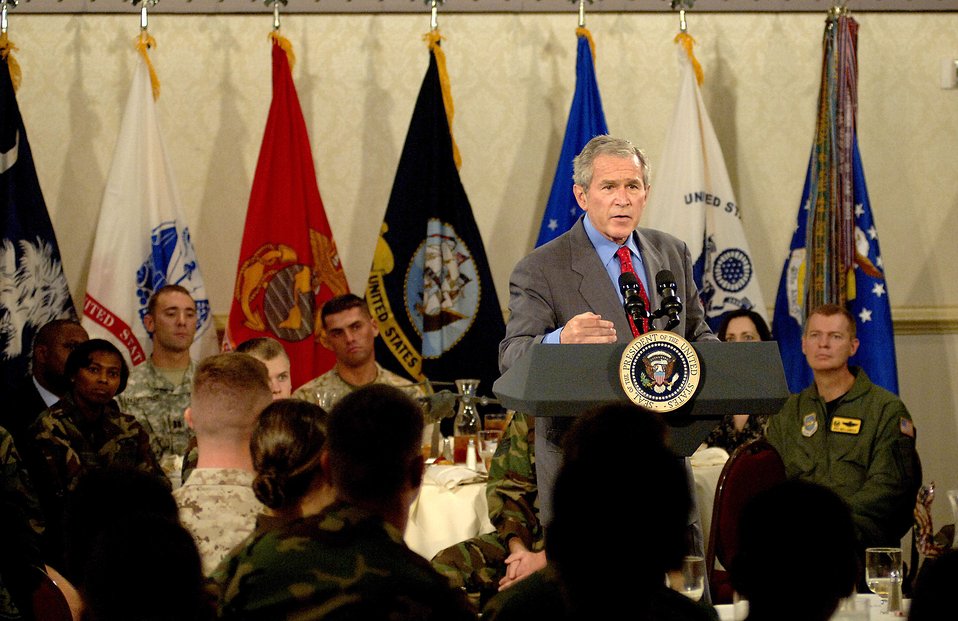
President visits Charleston, addresses military members

President George W. Bush talks about the war on terrorism July 24 at Charleston Air Force Base, S.C. President Bush visited Charleston AFB, took a tour of a static C-17 Globemaster III, ate lunch with Airmen from the base and talked about the war on terrorism.